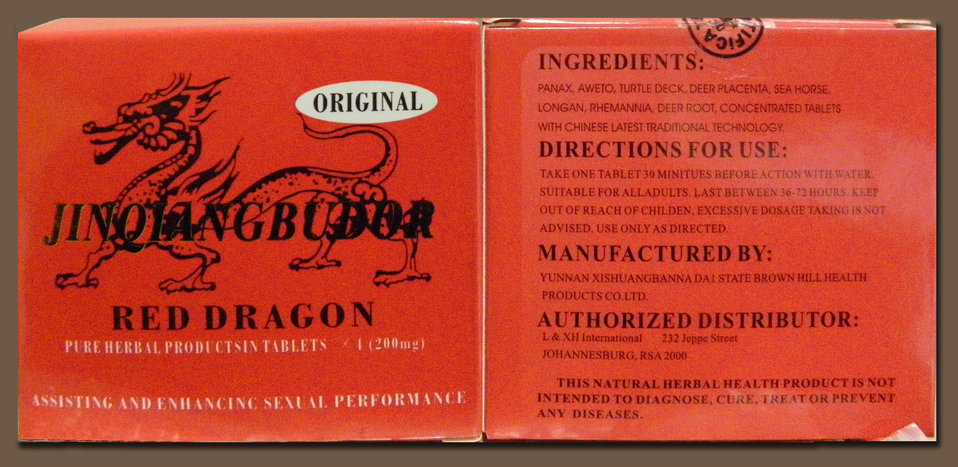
JINQIANGBUDOR Red Dragon

January 28, 2014 - The FDA is advising consumers not to purchase or use JINQIANGBUDOR Red Dragon, a product promoted and sold as a dietary supplement for sexual enhancement. The product was found to contain undeclared sildenafil.